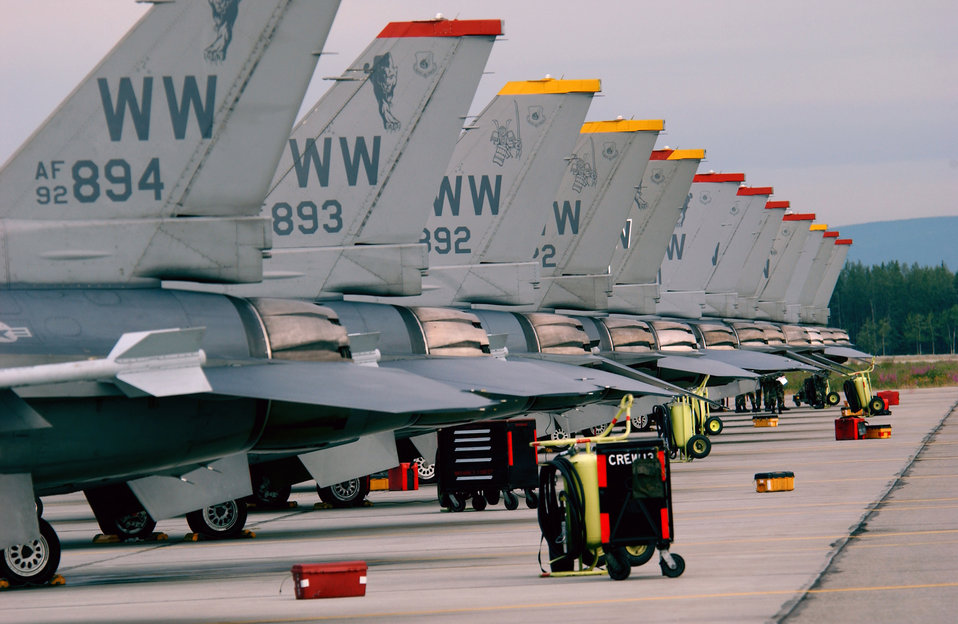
Cooperative Cope Thunder 2006

F-16 Fighting Falcons from the 13th Fighter Squadron at Misawa Air Base, Japan, sit on the flightline at Eielson Air Force, Alaska, on July 18 in preparation for Cooperative Cope Thunder 2006. The combined joint air training exercise provides scenarios that are as realistic as combat within the constraints of the training environment.